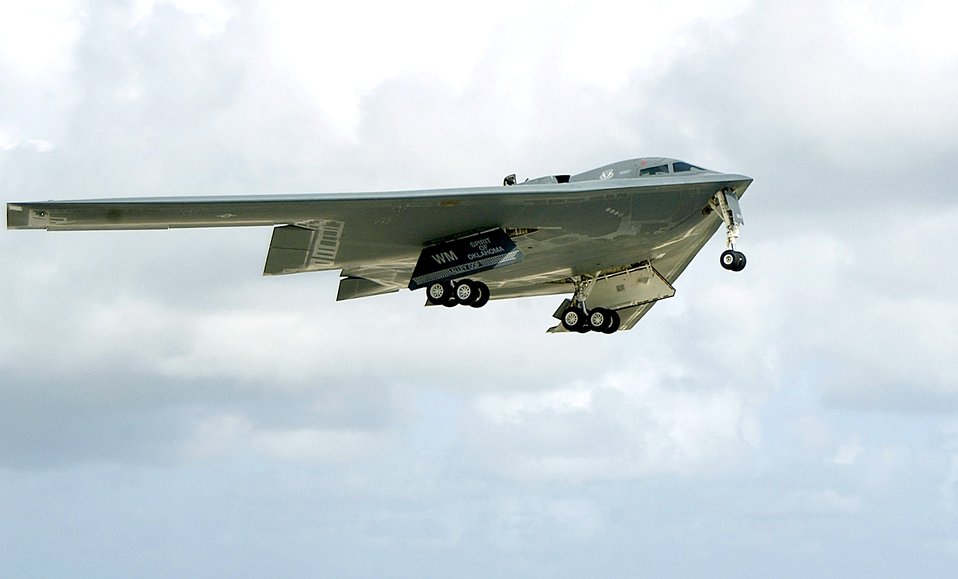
The

OVER ANDERSEN AIR FORCE BASE, Guam -- A B-2 Spirit stealth bomber takes off from here March 30. The B-2 Spirits and more than 270 personnel from the 393rd Bomb Squadron at Whiteman Air Force Base, Mo., are deployed here in support of Pacific Command's continuous bomber presence in the Asia-Pacific region.